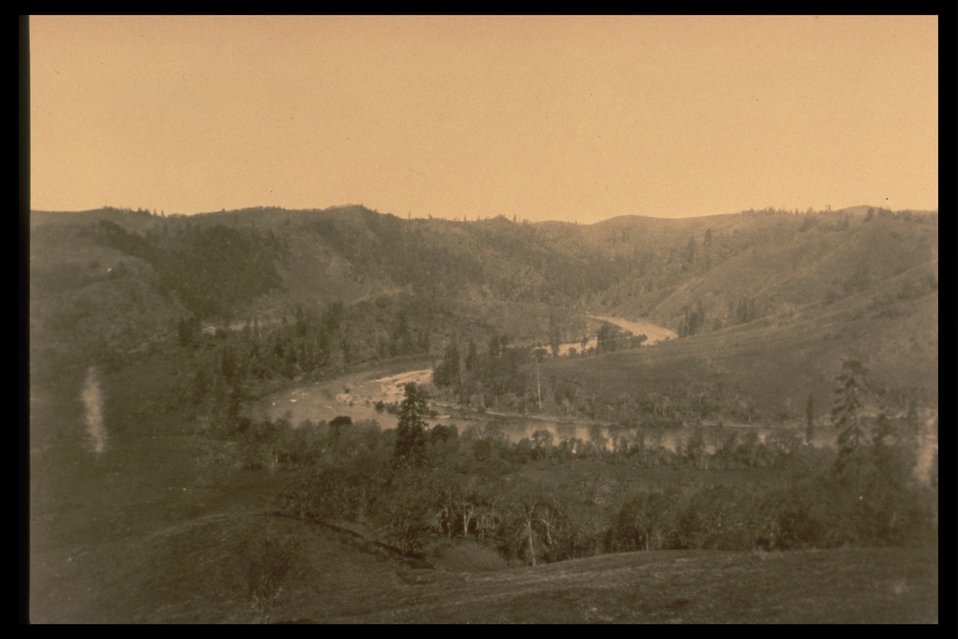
Black and white vista of river and forest.